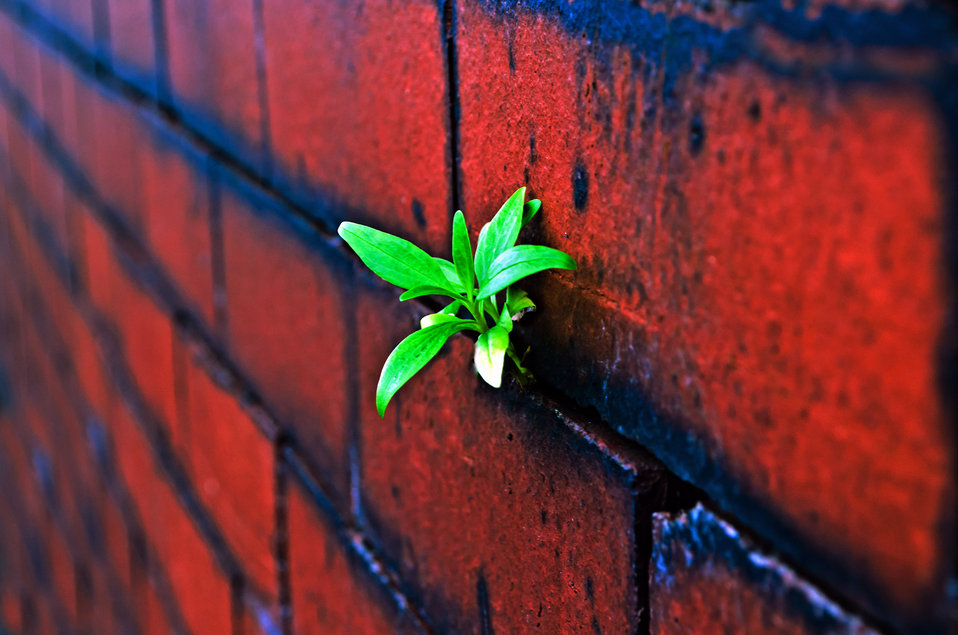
Plant on the brick wall.